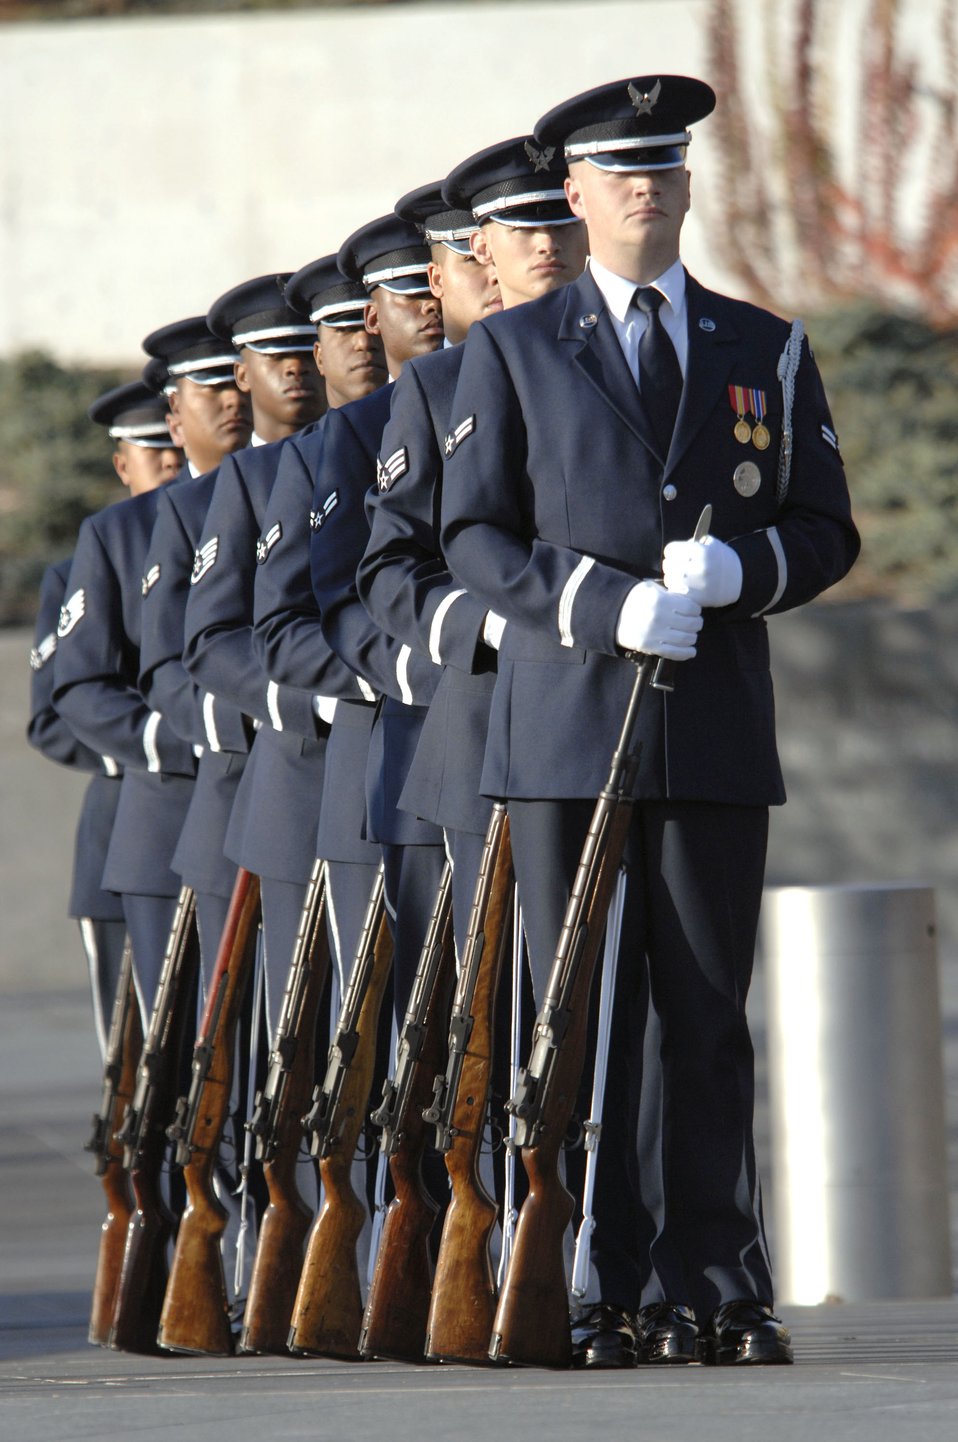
Air Force Honor Guard

United States Air Force Honor Guard members from Bolling AFB, participate in a ceremony rememberance of fallen Air Force members from the past and present Nov. 10 in Arlington, Va.